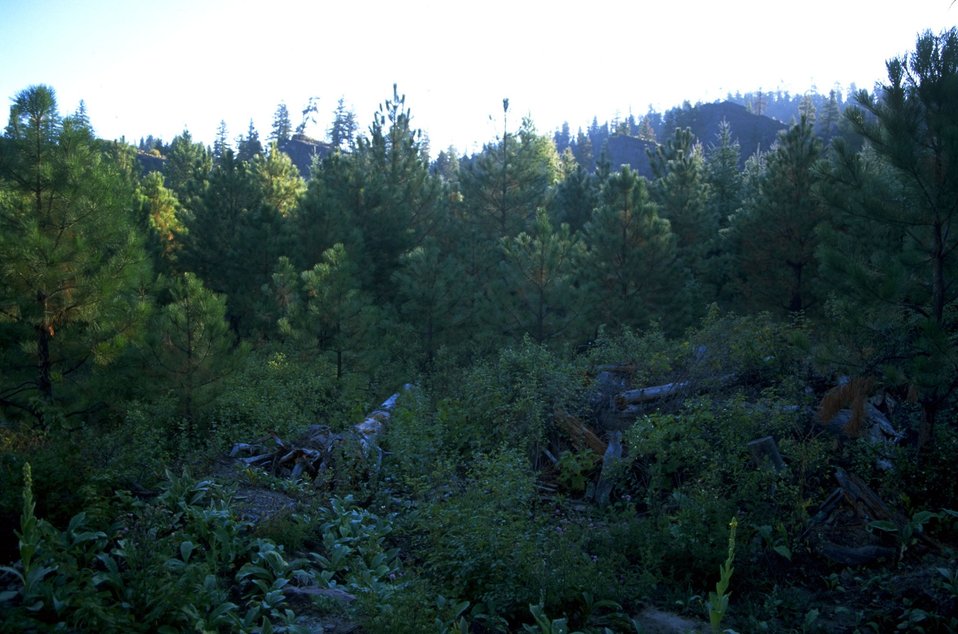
Forested area